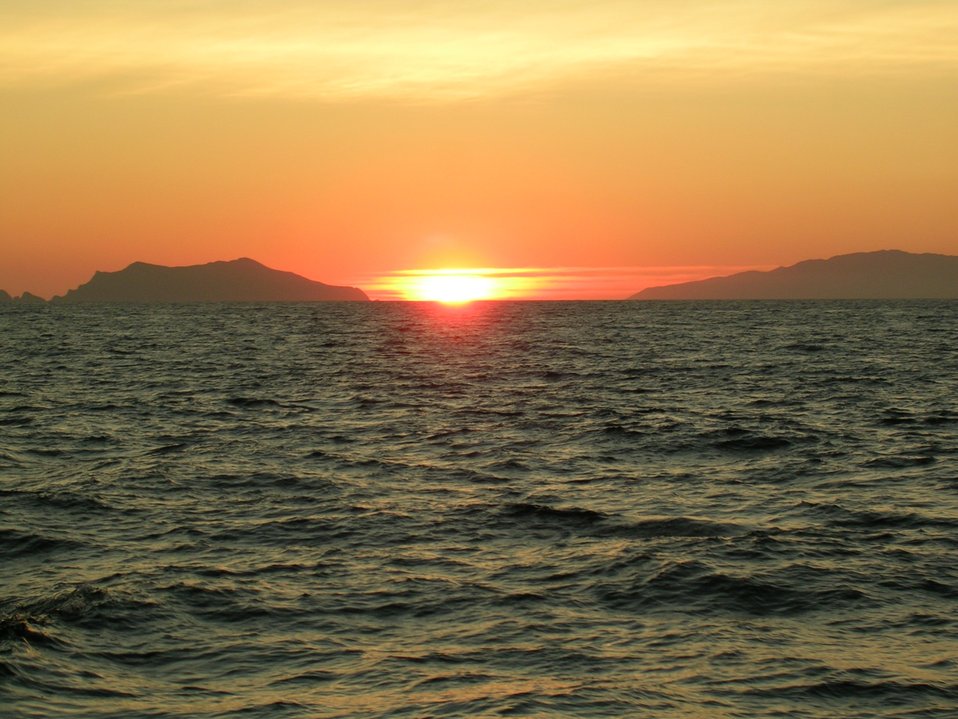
Sunset between Santa Cruz and Anacapa Islands as viewed from the contract fishery research vessel AGRESSOR.